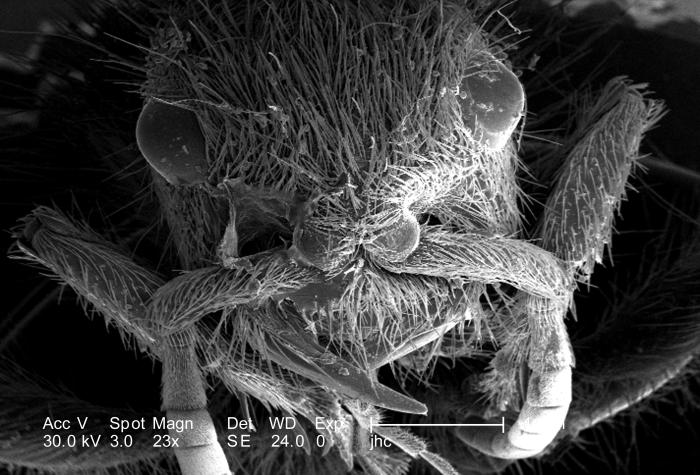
At a low magnification of only 23X, this scanning electron micrograph (SEM) showed the head region from an anterior view of a female velvet ant, Dasymutilla sp.. Note the two laterally positioned eyes, the anterior pair of antennae, each attached to the head by a rounded "scape", the numerous 'hairs' or setae adorning almost all exterior surfaces, and the jointed legs, from which the insects Phylum Arthropoda is derived, i.e., Arthro = 'jointed', and poda 'leg'. Also see PHIL 4638, 6363, and 6364 for photographs of the ant revealing its coloration, and velvety covering of external chitinous hairs